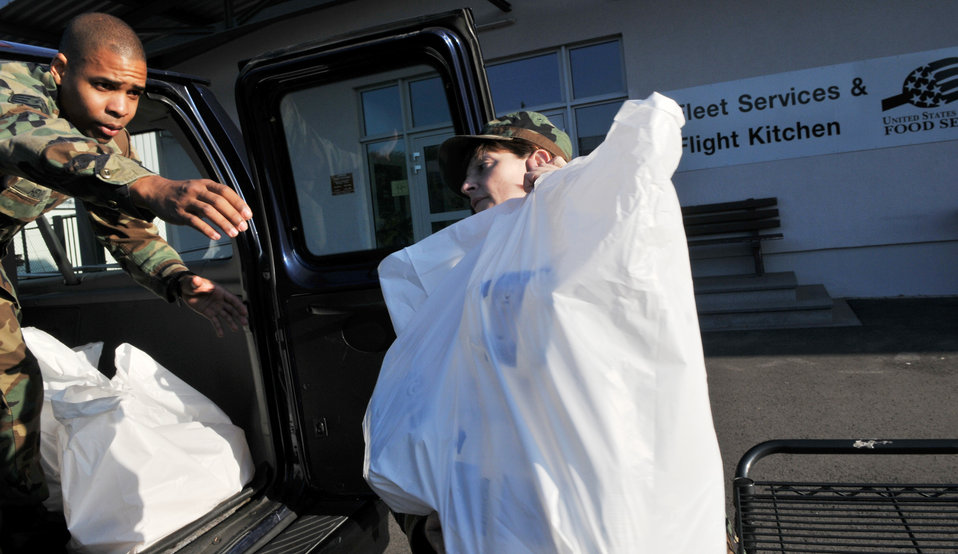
Aeromedical staging facility staff to reach major milestone in warrior care

Staff Sgt. Arnold Henry (left) and Tech. Sgt. Christina Werkin pick-up food and drinks for incoming wounded warriors Aug. 27, 2009, Ramstein Air Base, Germany. Sergeants Henry and Werkin are 86th Contingency Aeromedical Staging Facility medical technicians.